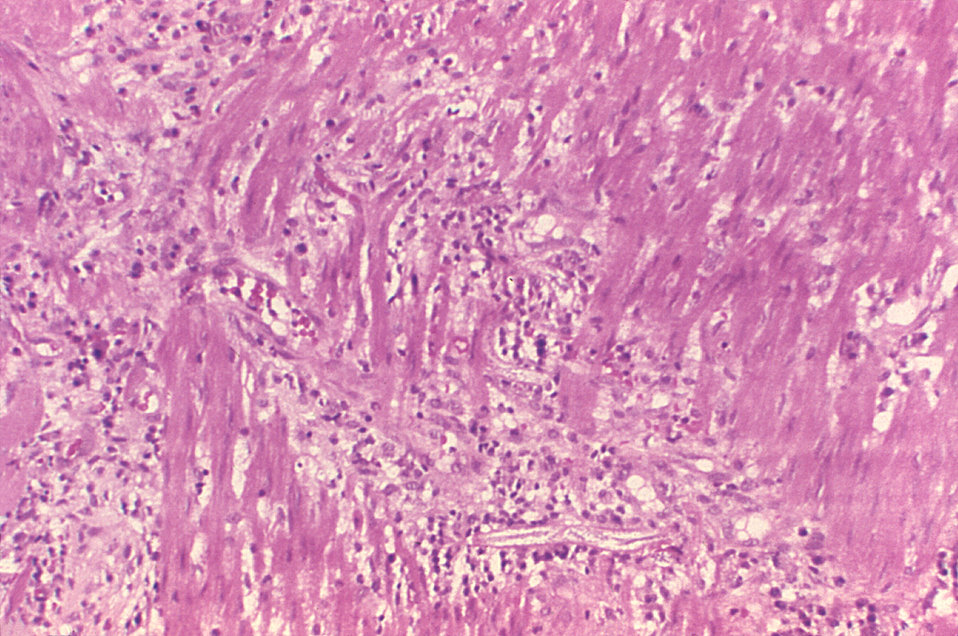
This photomicrograph reveals histopathologic changes indicative of the presence of the intestinal parasitic nematode (roundworm), Strongyloides stercoralis.Clinical Features: